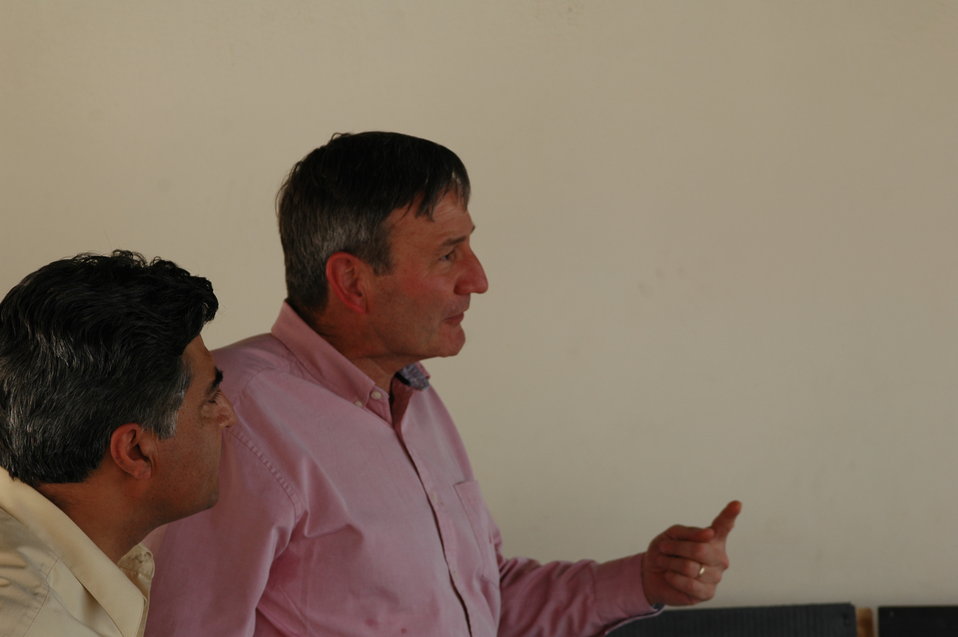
CODEL Berman